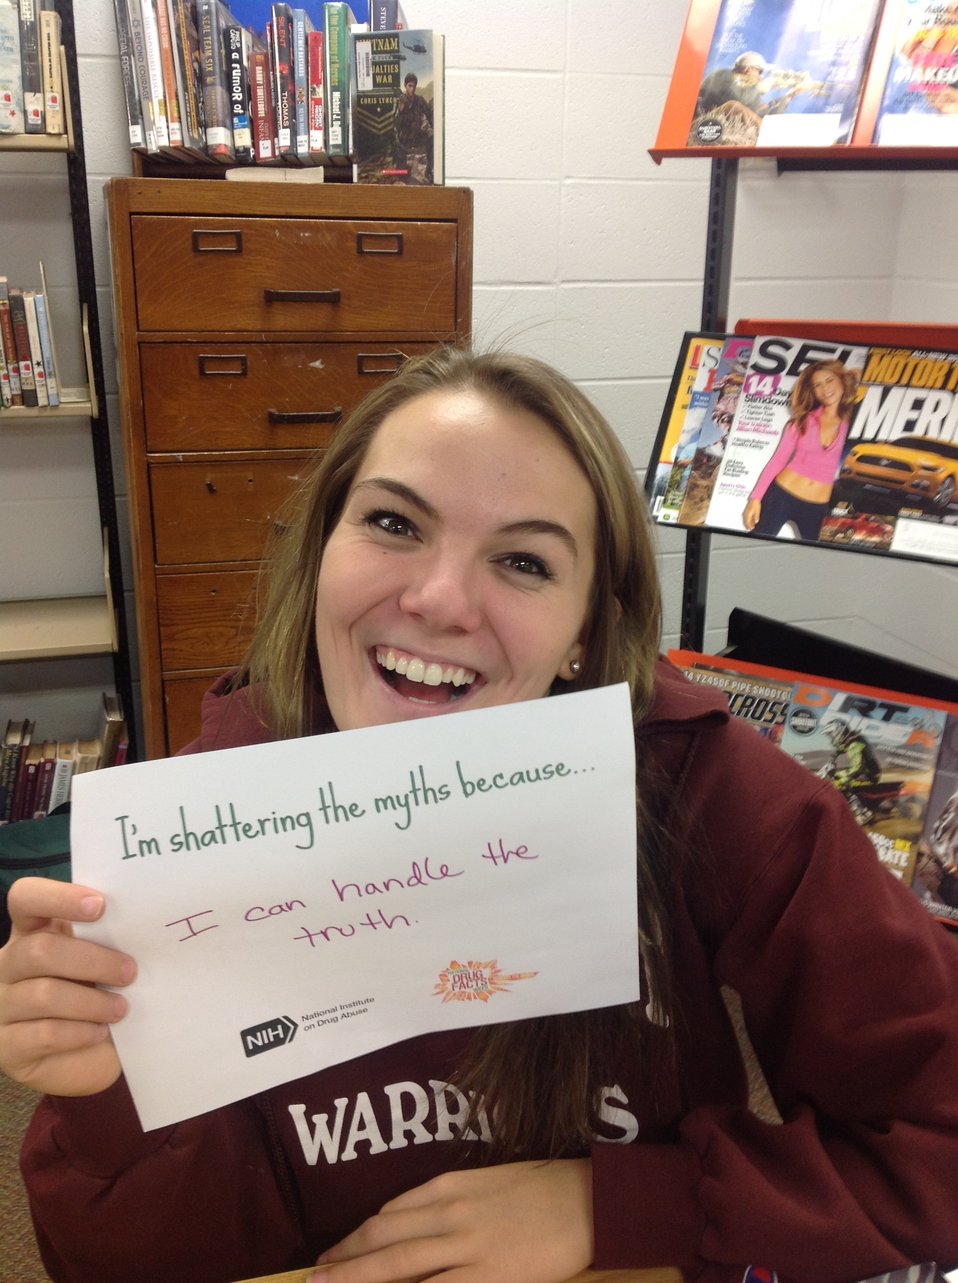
I'm Shattering the Myths Because...

Teenagers from the Van Buren County SAFE Coalition's, Youth Leadership Council (YLC) in Keosauqua, Iowa participate in various events during National Drug Facts Week, 2014.